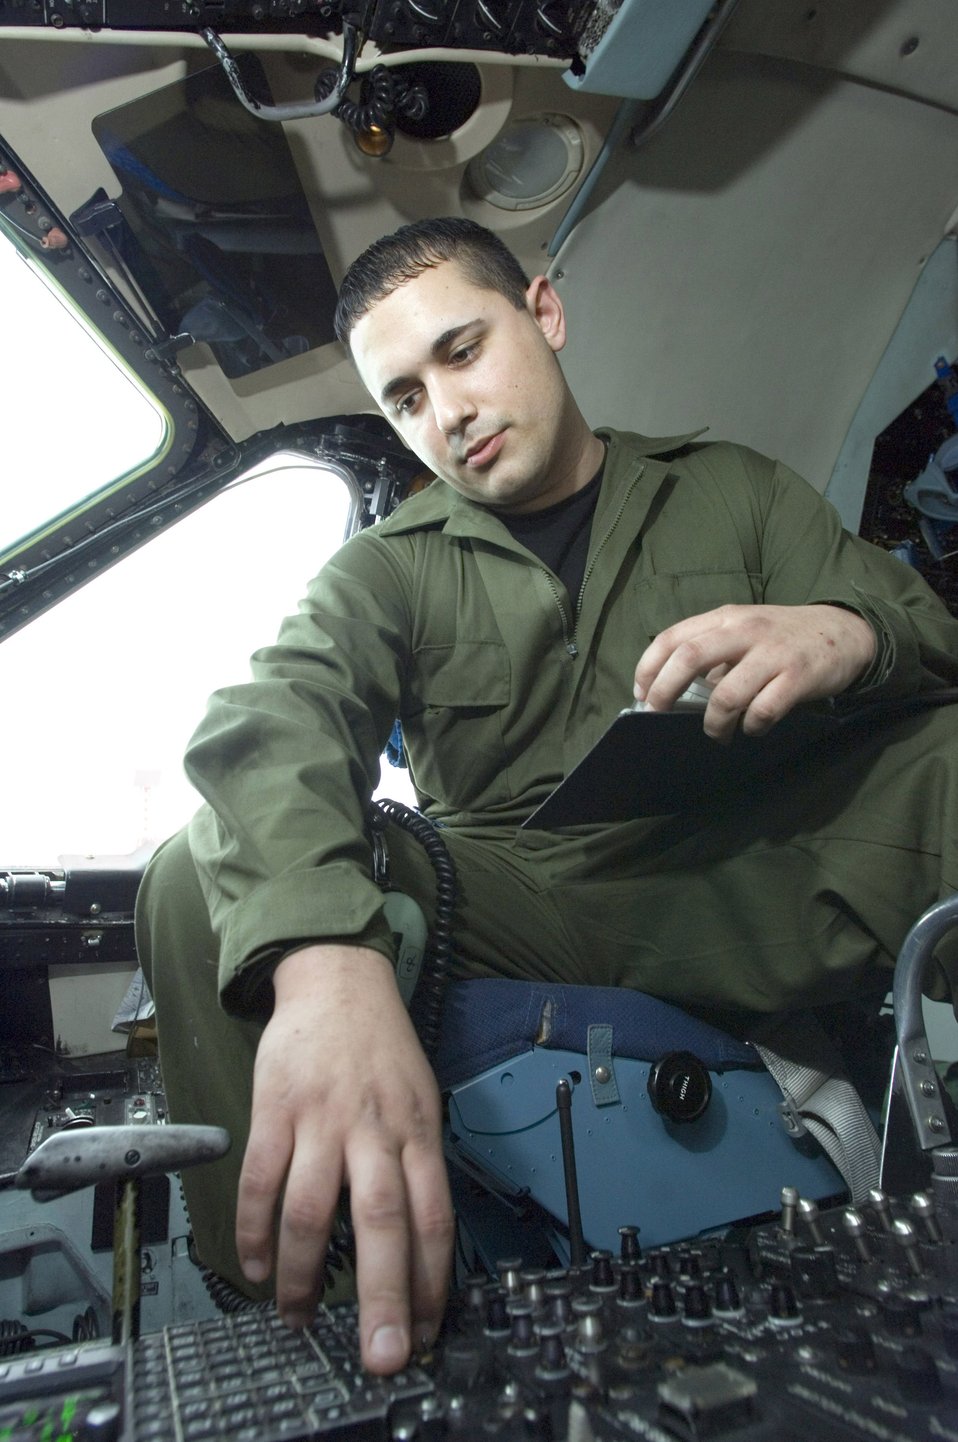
Ramstein airlift mission at full speed

Senior Airman Aaron Ballegos runs a diagnostic check on the radio and navigation system on a C-5 Galaxy at Ramstein Air Base, Germany, on Thursday, March 30, 2006. Airman Ballegos, of Seattle, Wash., is a communications and navigations specialist with the 723rd Aircraft Maintenance Unit.